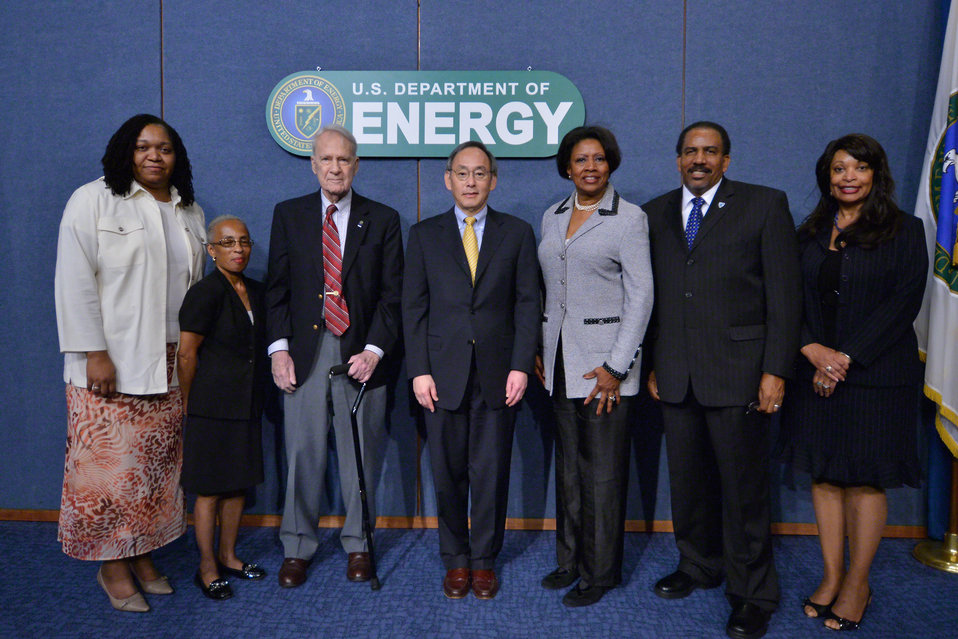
1 HC

Charter employees from the Office of the Chief Human Capital Officer with Secretary Steven Chu, current Secretary of Energy, and Secretary James Schlesinger, first Secretary of Energy.